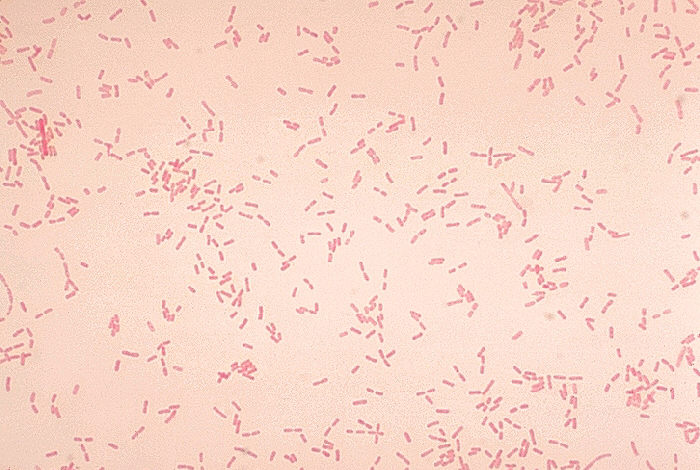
Alcaligenes faecalis. Gram stain.